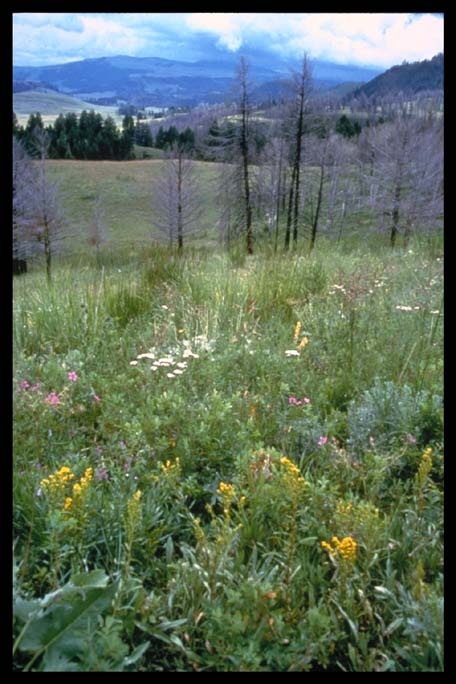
Regrowth